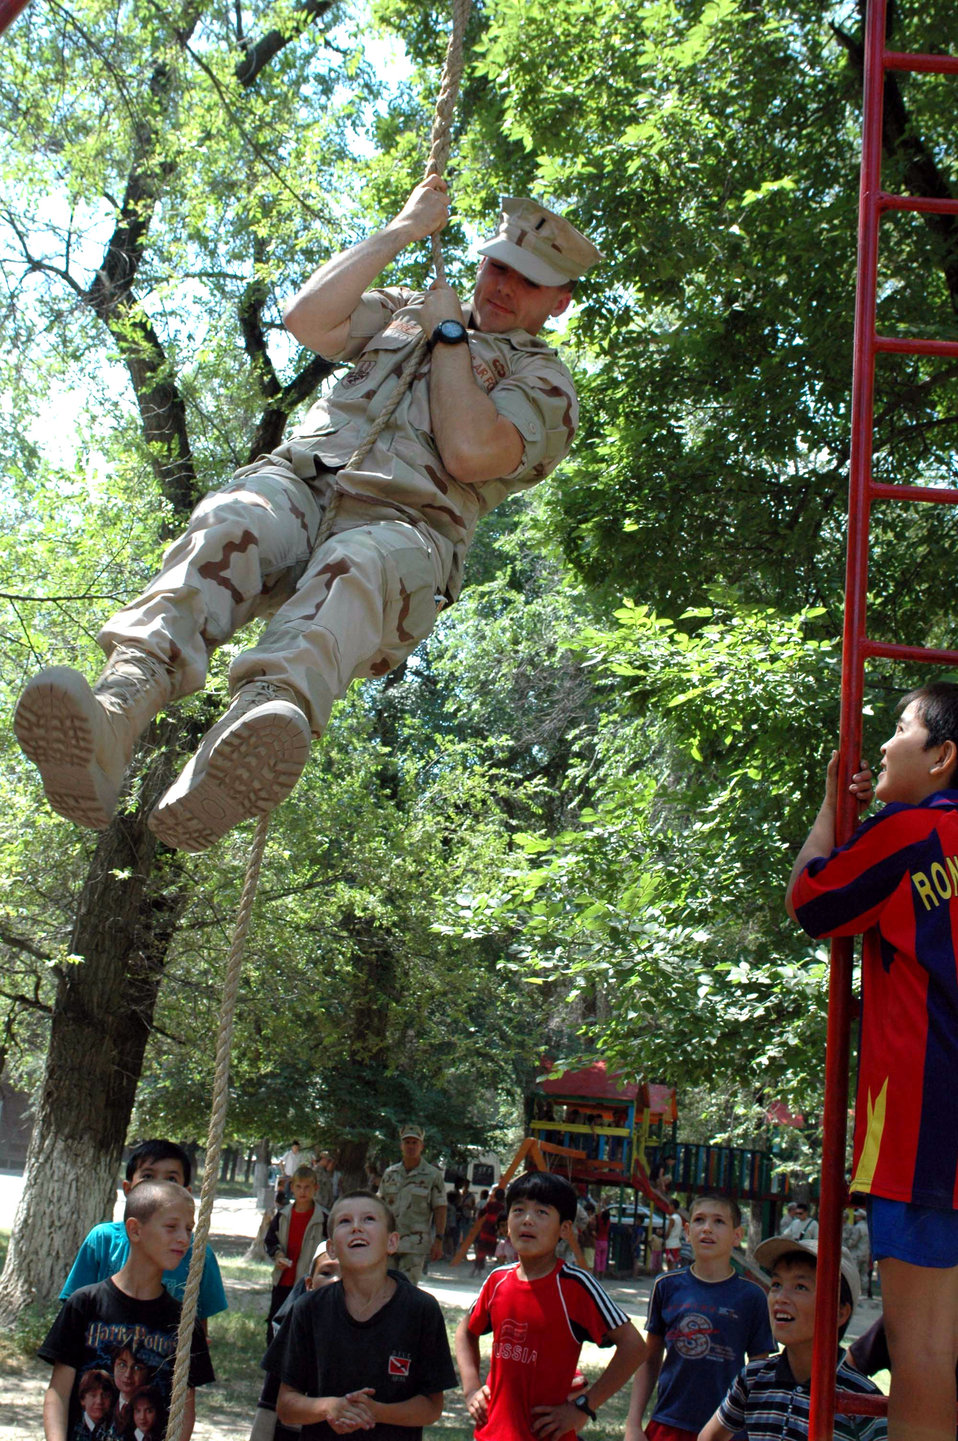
376th ESFS dedicates new children's playground

1st Lt. Tobey Hockridge, 376th Air Expeditionary Wing, Manas Air Base, Kyrgyzstan, climbs to the top of a rope, dazzling Oktobersky Village, Kyrgyzstan children. Members from the 376th AEW were on hand to dedicate a new children's playground, built by members of the 376th Expeditionary Security Forces and Civil Engineer squadrons. Lieutenant Hockridge is deployed from the 43d Communications Squadron, Pope Air Force Base, N.C.